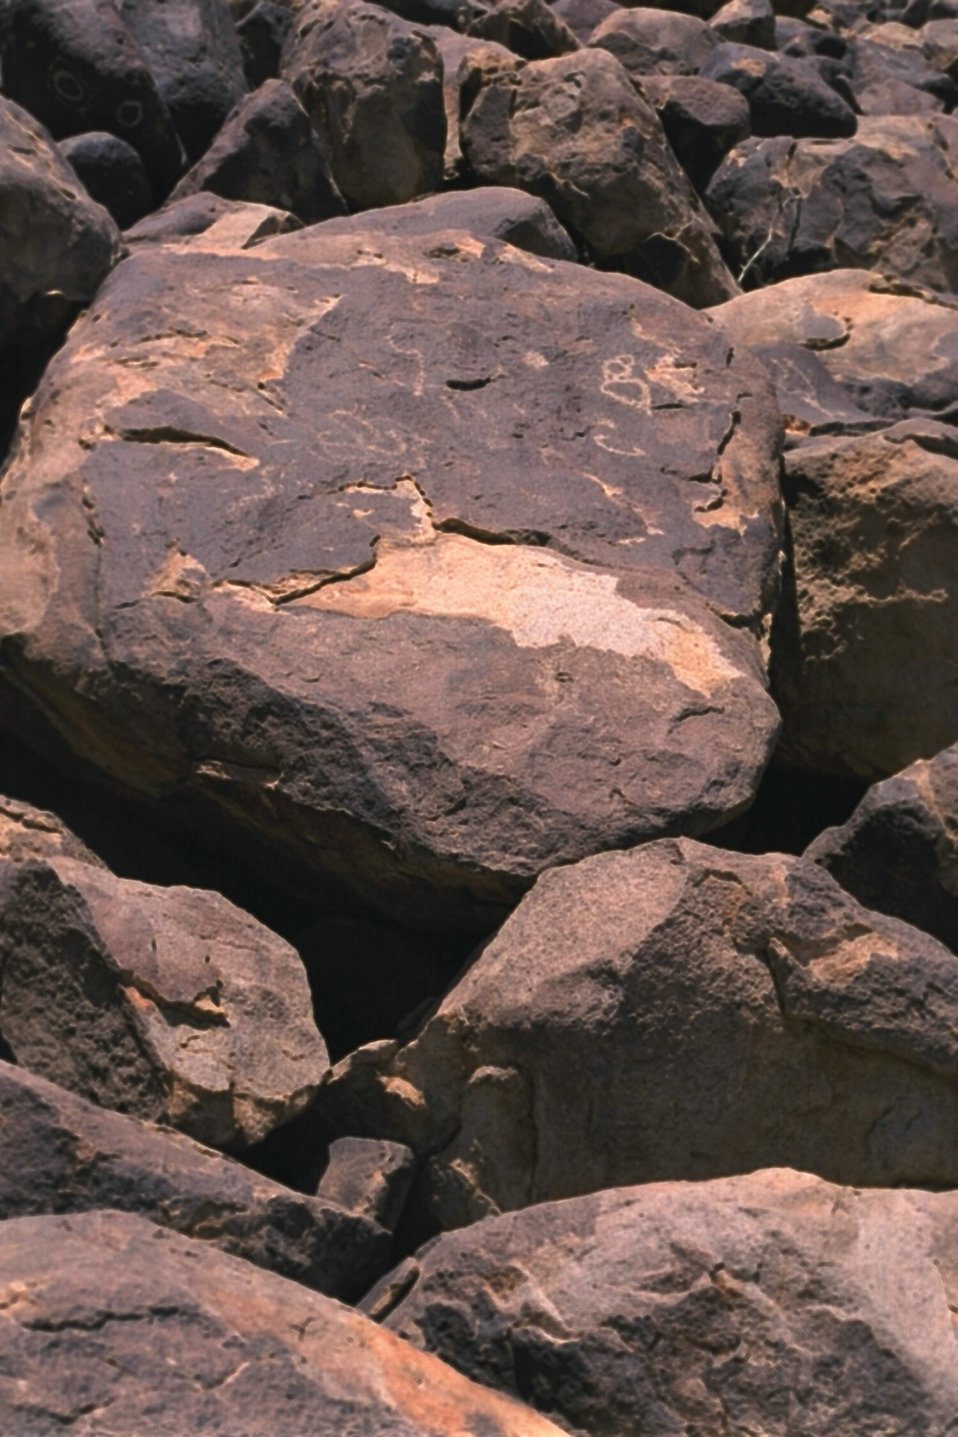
Historical petrogylphs at the Cocoraque Butte Archaeological District found at the Ironwood Forest National Monument.